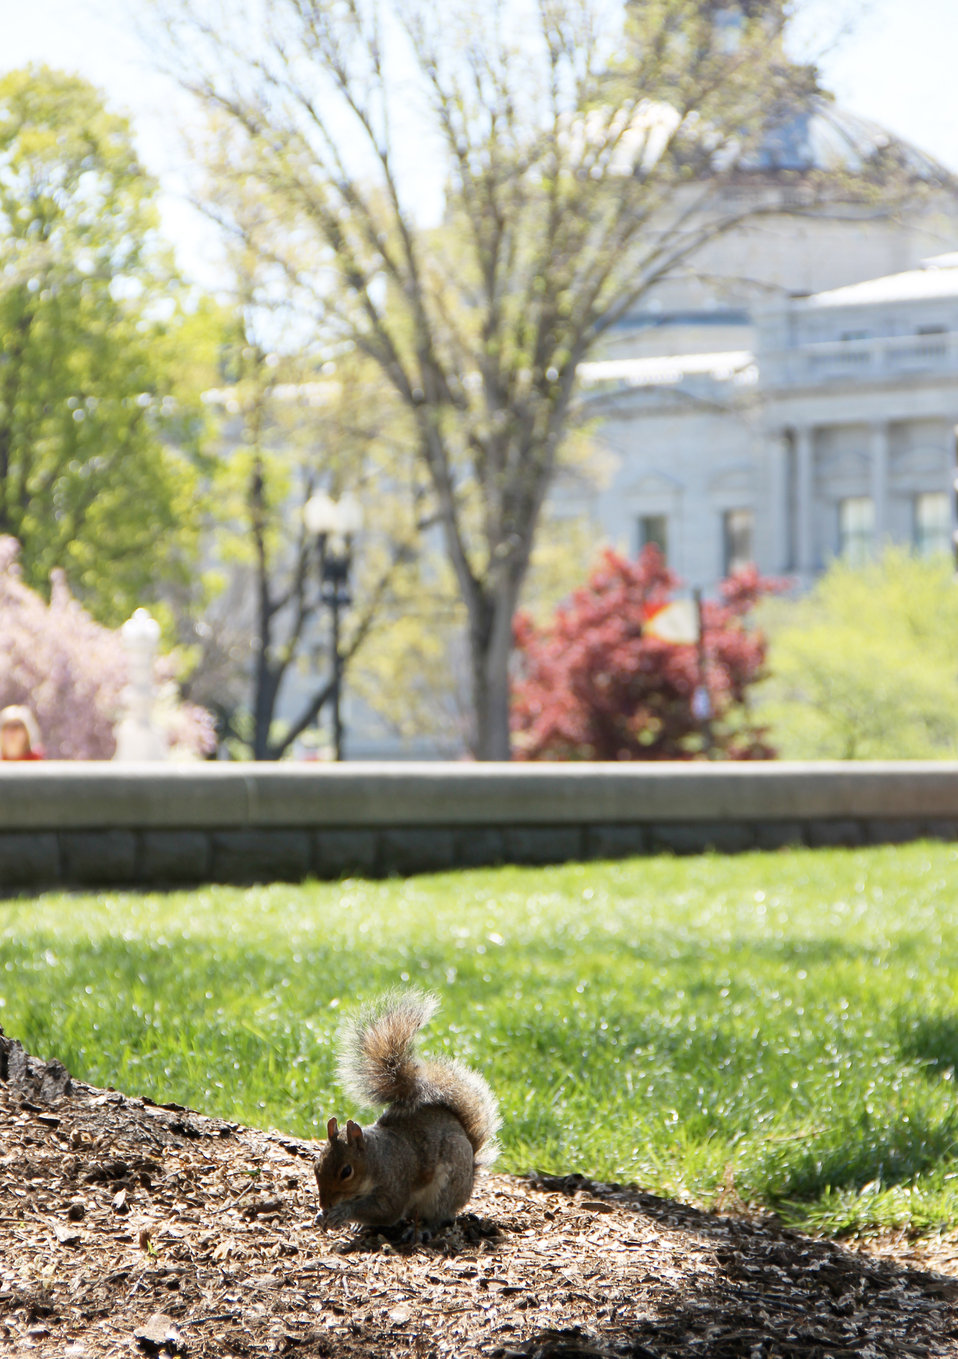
Squirrel in front of the Library of Congress

The AOC has recently uncovered 113 years of history surrounding squirrels on Capitol Hill: www.aoc.gov/cc/grounds/Squirrels-on-the-Capitol-Grounds.cfm.